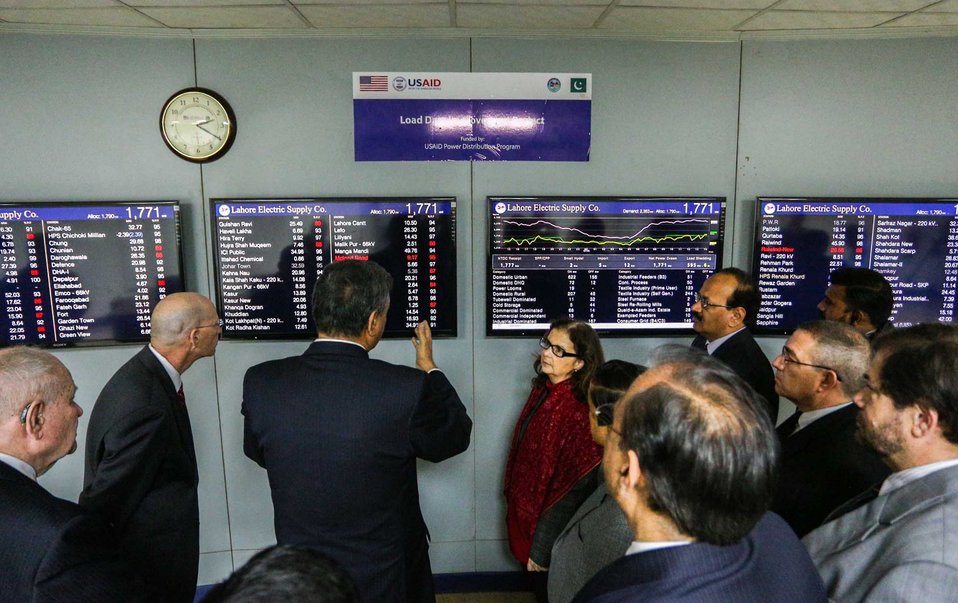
Improving Lahore Electric Supply Company’s Capacity to Reduce Load Shedding

EFFICIENCY
“This project will provide real-time access to electricity load data to managers of Pakistan’s electricity grid and help Lahore Electric Supply Company overcome unscheduled load shedding. The U.S. Government and the American people are committed to assisting the Government of Pakistan in improving the power distribution system throughout Pakistan. We partner with power distribution companies to improve their operations, reduce losses, and ultimately make sure that the Pakistani people have a more reliable power supply.”
United States Consul General
Nina Maria Fite

(Picture Above) Improving Lahore Electric Supply Company’s Capacity to Reduce Load Shedding: Marking a milestone in U.S. support to Pakistan’s energy sector, U.S. Consul General Nina Maria Fite inaugurated the Power Distribution Control Center at the Lahore Electric Supply Company (LESCO). The LESCO center was established with support from the U.S. Agency for International Development (USAID) and will enable LESCO to monitor the flow of power through their grid stations. The new meters will verify actual power flow and reduce unplanned load shedding.